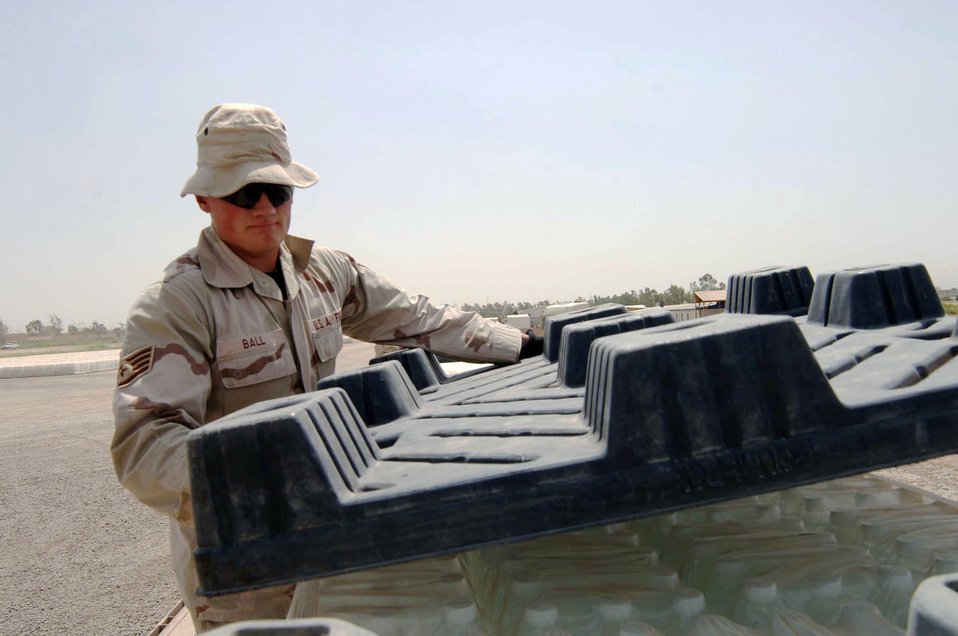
Drink up: Tigris River is life for troops in Baghdad

Staff Sgt. Richard Ball covers palletized water before strapping it to a flat-bed truck at Camp Liberty in Iraq. The water will be trucked to Sather Air Base, Iraq, for distribution. Sergeant Ball is assigned to the 447th Expeditionary Logistics Readiness Squadron.